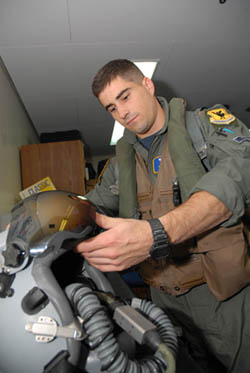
Serving through the season: Capt. Kris J. Person

Capt. Kris Person checks his helmet to make sure it is in proper working order prior to a flight. Captain Person is one of several Airmen who will be spending the holidays flying training missions upholding the Treaty of Mutual Agreement between the United States and Japan. The captain is assigned to the 18th Operations Support Squadron as a electronic combat officer and flies with the 44th Fighter Squadron.